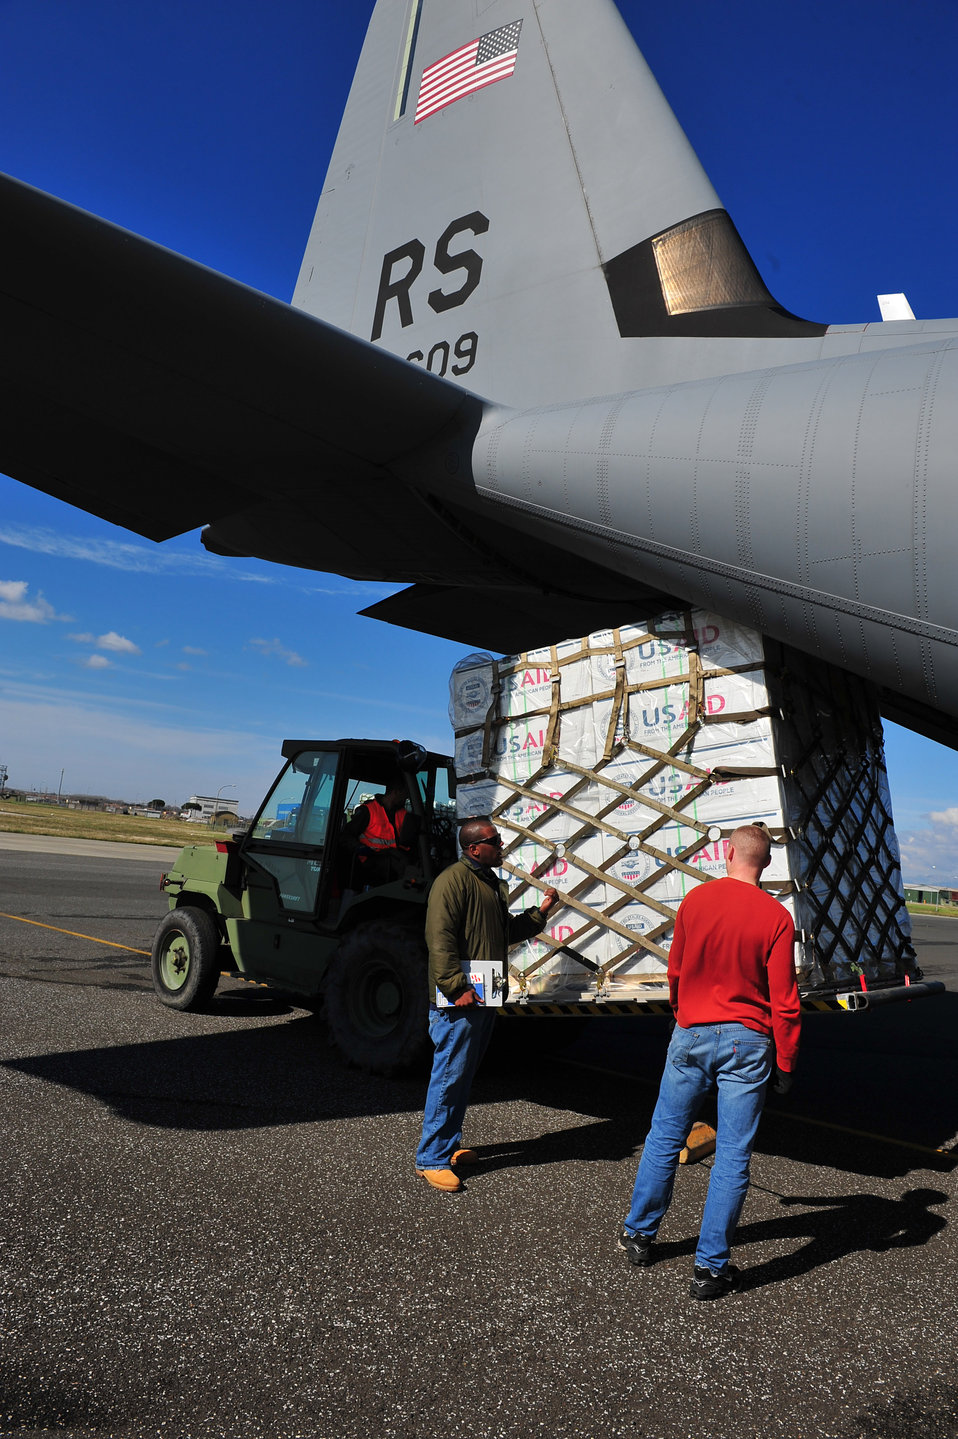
U.S. Airmen Load Blankets, Tarps, and Water Containers Onto Aircraft

U.S. Airmen, from the 435th Air Mobility Squadron out of Ramstein Air Base, load blankets, tarps, and water containers onto C-130 aircraft in Pisa, Italy, on March 4, 2011. These aircraft will then fly these supplies to Tunisia. The U.S. Government is working intensely with the International community to meet the humanitarian needs of the Lybian people and others in the country who fled across the borders. [Staff Sgt. Brendan Stephens photo/ U.S. Army photo]